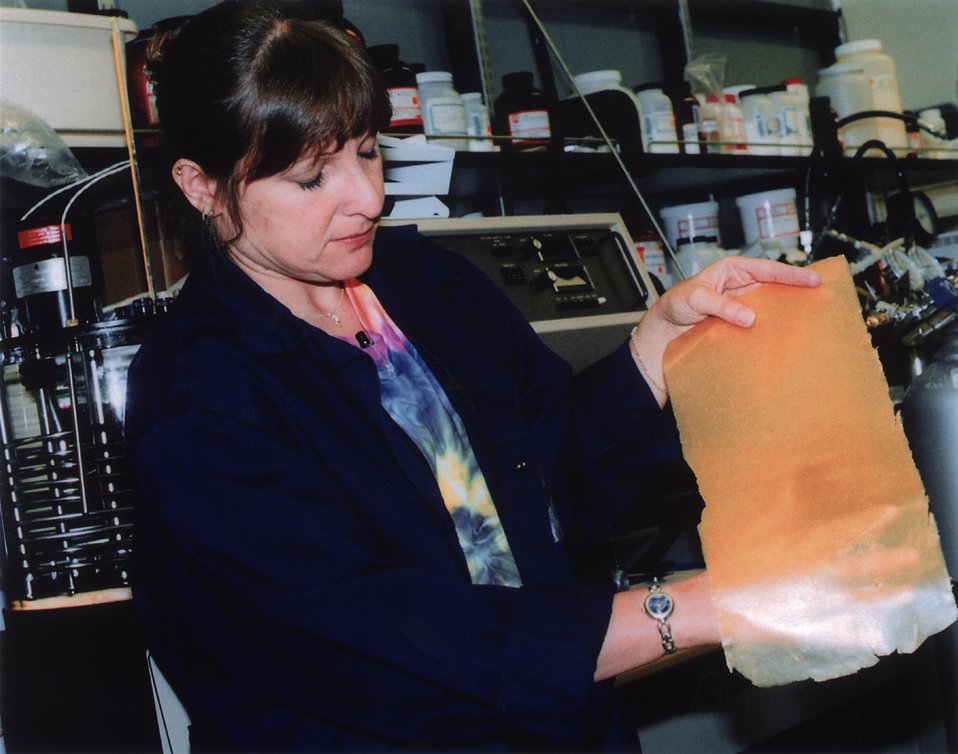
SANDIA TECHNOLOGIST HOLDS A SHEET OF UNHEATED ADHESIVE.

IN THE UNHEATED STATE THIS ADHESIVE RESEMBLES A LARGE RUBBER BAND. A SANDIA TEAM DEVELOPED A REMOVABLE EPOXY ADHESIVE THAT MAKES BONDING AND DETACHING PARTS A MATTER OF TEMPERATURE CHANGE. NO OTHER ADHESIVE WITH THE STRONG BONDING CHARACTERISTICS OF AN EPOXY CAN MELT AND LOSE ITS BONDING CAPABILITY AT HIGH TEMPERATURES AND THEN RE-BOND WHEN THE TEMPERATURE IS LOWERED.